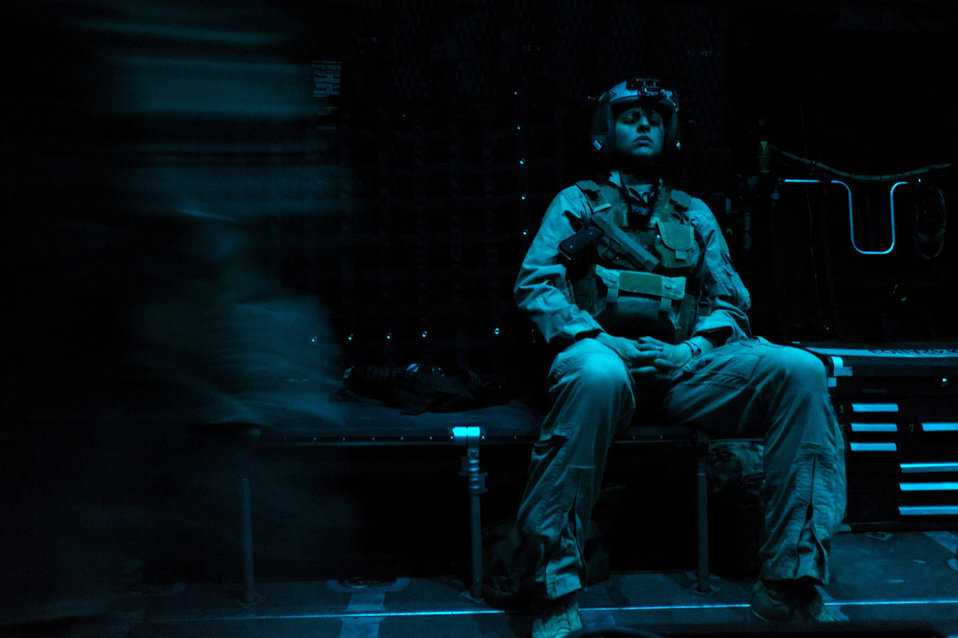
Flight surgeon

Capt. Susan Marchiano rests before arriving at a pick-up location for a severely wounded U.S. service member aboard an HC-130 P/N King aircraft April 12, 2010, over Afghanistan. Marchiano was selected at the Air Force's top flight surgeon.